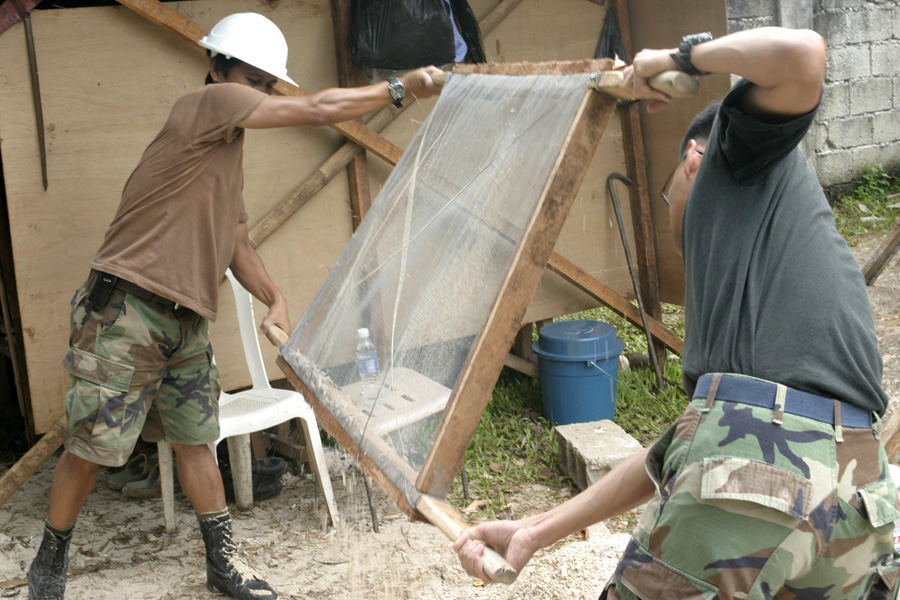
Balikatan 2006

JOLO, Philippines (AFPN) -- An Armed Forces of the Philippines engineer and an Airman work at the construction site of a three-room school, an addition to the existing Sulu High School, Feb. 20. This is one of several civil action programs taking place during Exercise Balikatan 2006.